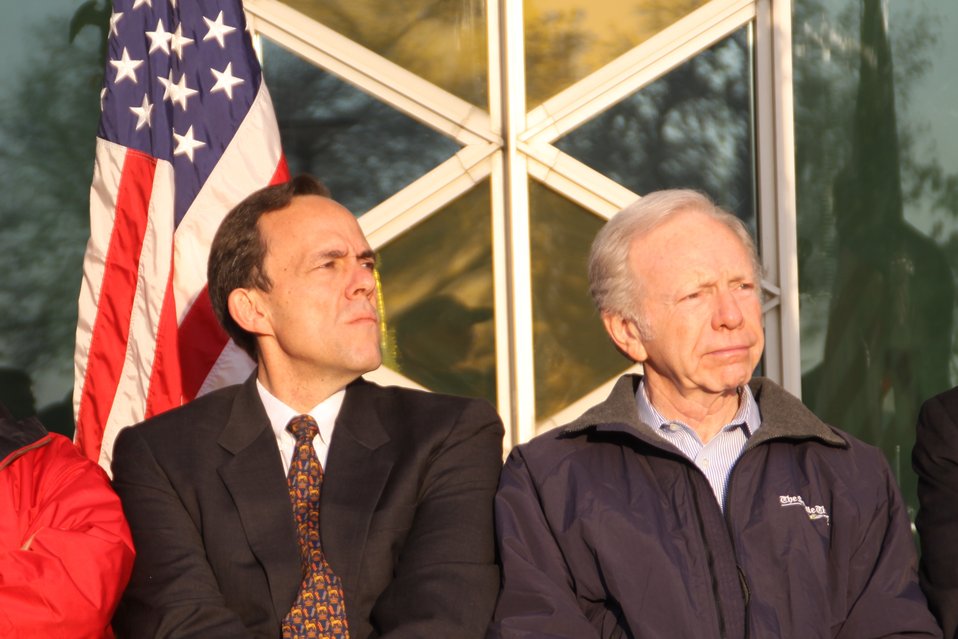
Senator Lieberman and Ambassador Todd